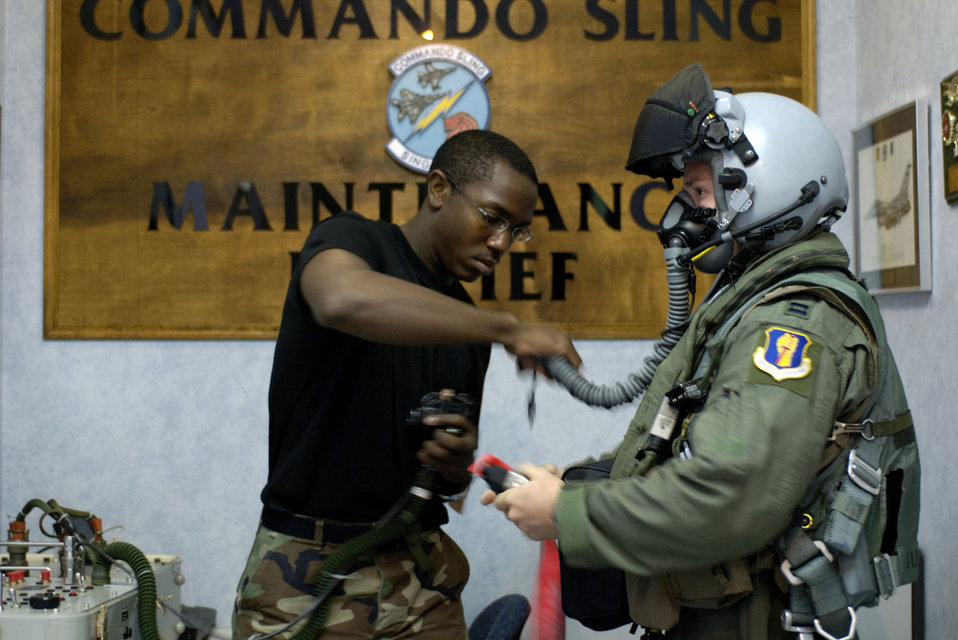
Commando Sling

PAYA LEBAR AIR BASE, Singapore -- Senior Airman Nathaniel Newkirk checks Capt. Justin Dupuis' flight helmet and mask before a mission here Nov. 8 during Exercise Commando Sling. The annual exercise began in 1990 to provide valuable combined air combat training for U.S. and Singapore Air Force fighter units. The exercise allows units to sharpen air combat skills, improve procedures for sustained operations at a non-U.S. base, and promote closer relations between the two air forces and nations. The Airmen are from the 14th Fighter Squadron at Misawa Air Base, Japan.